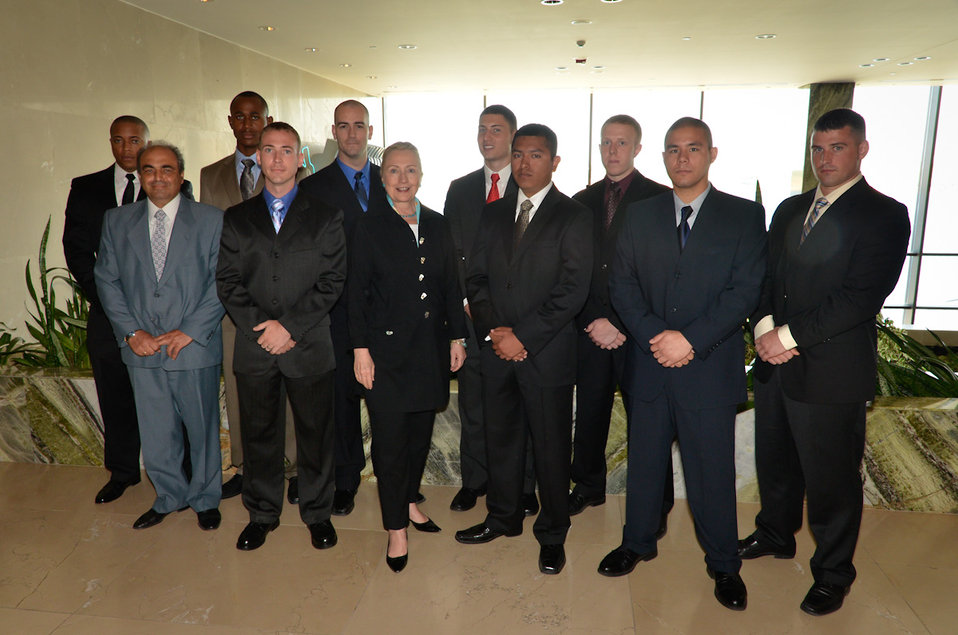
Secretary Clinton Poses for a Photo With U.S. Marines

U.S. Secretary of State Hillary Rodham Clinton poses for a photo with U.S. Marines in Athens, Greece, on July 18, 2011.